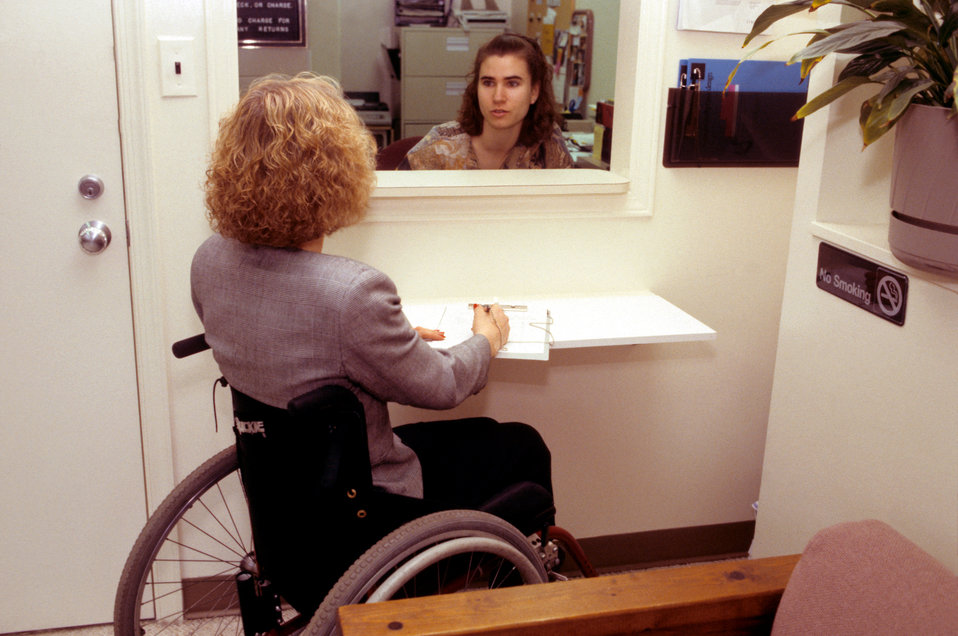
Depicted in this 1994 image, a woman who was seated in her wheelchair, had approached an office receptionist, and was conversing with her through an information window, while it appeared that she was in the process of filling out an appointment attendance book. Note that the level of the writing ledge was quite accommodating to the wheelchair-seated, mobility-challenged visitor, which showed that such situations were taken into account during the design phase of this interactive site. In new facilities it is preferred that the lowered surface be built-in as an integral part of the receptionist area. Such designs are able to facilitate the experience for both mobility-challenged, as well as non-challenged participants.